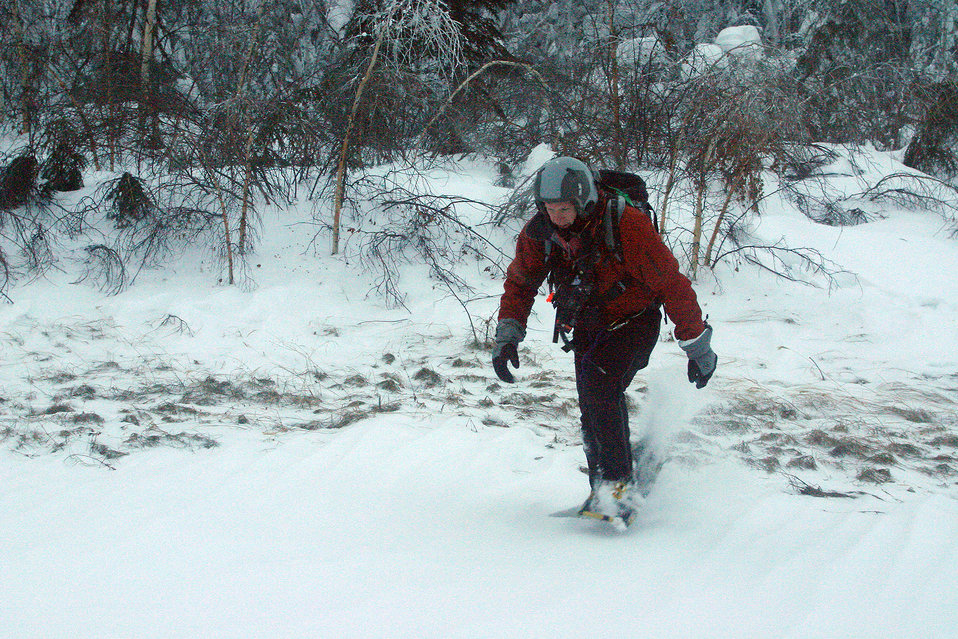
Snow problem

FAIRBANKS, Alaska -- Master Sgt. Paul Barendregt takes a break from some aircraft excavation work in subzero weather. The pararescueman used specialized tools and some old-fashioned digging to free a civilian aircraft that had become stuck after landing. Sergeant Barendregt is assigned to the Alaska Air National Guard’s 210th Rescue Squadron.